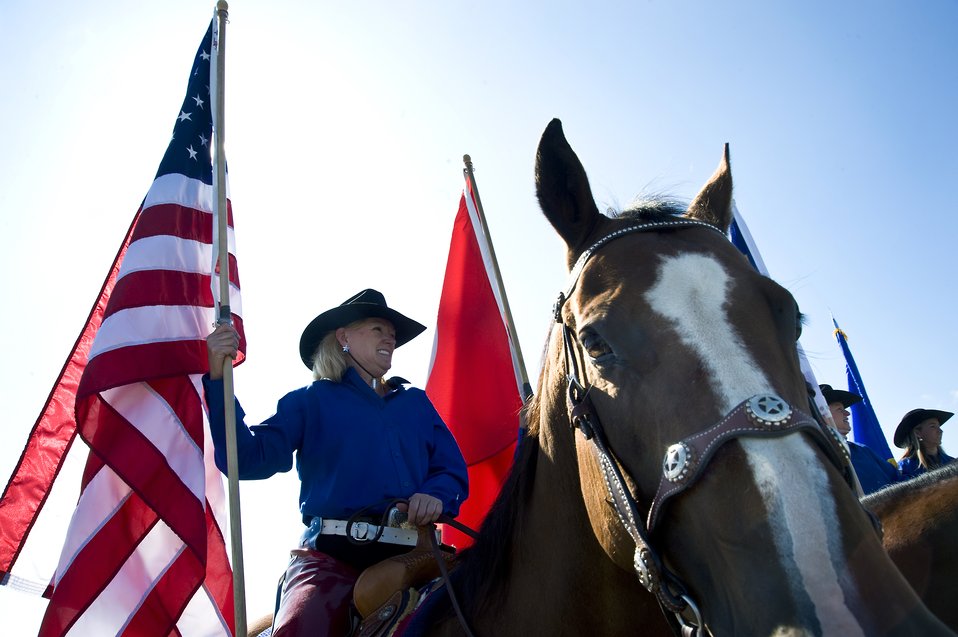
Air Mobility Rodeo begins at McChord

Renay Wilson of the Kitsap Stampede Starlets stands with the American flag along with other Starlets carrying flags from all participating countries of the Air Mobility Rodeo 2009 during the opening ceremony July 19 at McChord Air Force Base, Wash.